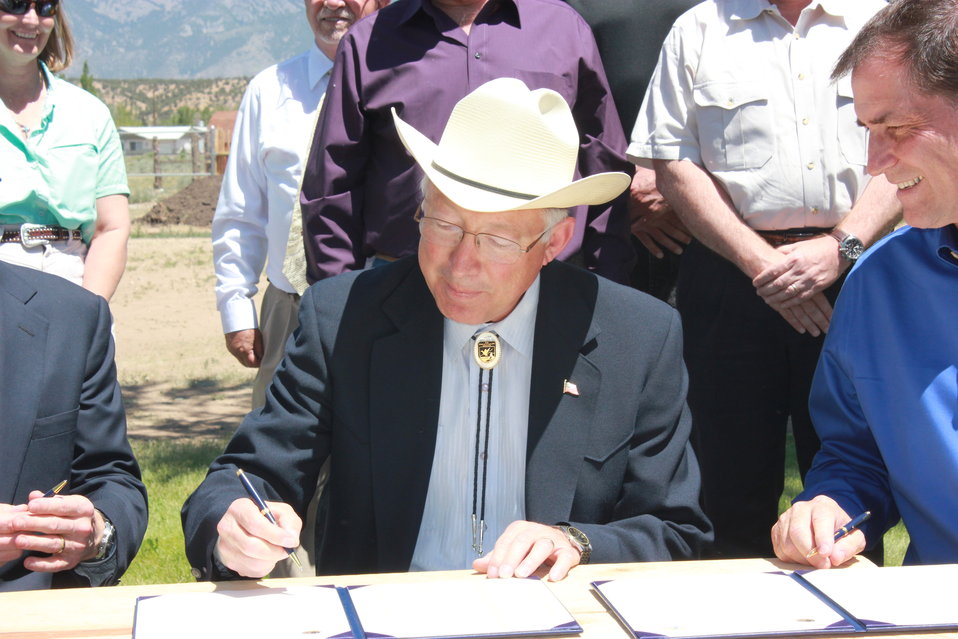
Historic Conservation Easement in Sangre de Cristo Mountains